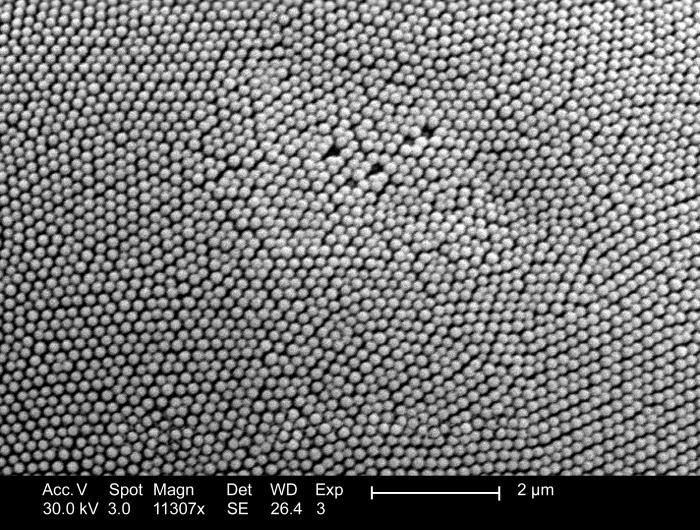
At a high-magnification of 11307x, this scanning electron micrograph (SEM) depicted the morphologic details found on the surface of an unidentified insect's compound eye. Discovered on the grounds of the Decatur, Georgia suburbs, the eye was seen to be composed of repeating hexagonally-shaped units known as 'ommatidia', hence the term 'compound'. Note the textured surface of each ommatidium reflecting the presence of tiny, repetitive visual subunits of which each is composed. In order to fully appreciate the structural hierarchy of the compound eye, see PHIL 7875, 7877, 7878, 7879, 7880, and this image (7881), for successively greater magnifications of this visual structure.